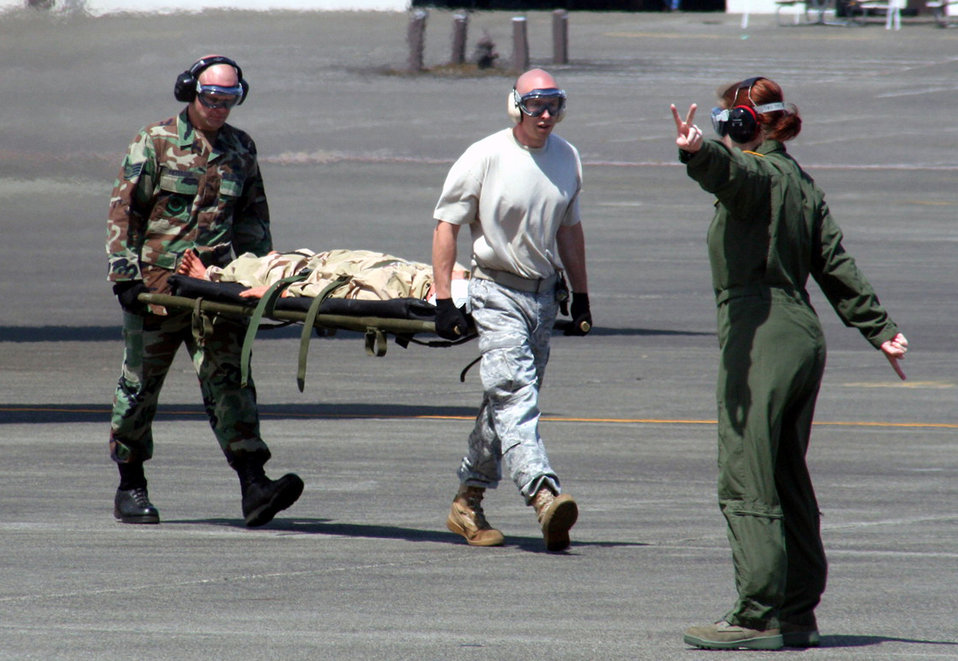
Aeromedical evac teams face off at Rodeo 2009

Teams competing in the aeromedical evacuation events for Air Mobility Rodeo 2009 wait in line as the competition commences July 20 at McChord Air Force Base, Wash. More than 100 teams are participating in Rodeo competition, including teams from seven foreign countries. Rodeo is the Air Force's and AMC's premier air mobility competition. It's an international combat skills and flying operations competition designed to develop and improve techniques, procedures and interoperability with international partners to optimize mobility partnerships and enhance mobility operations.